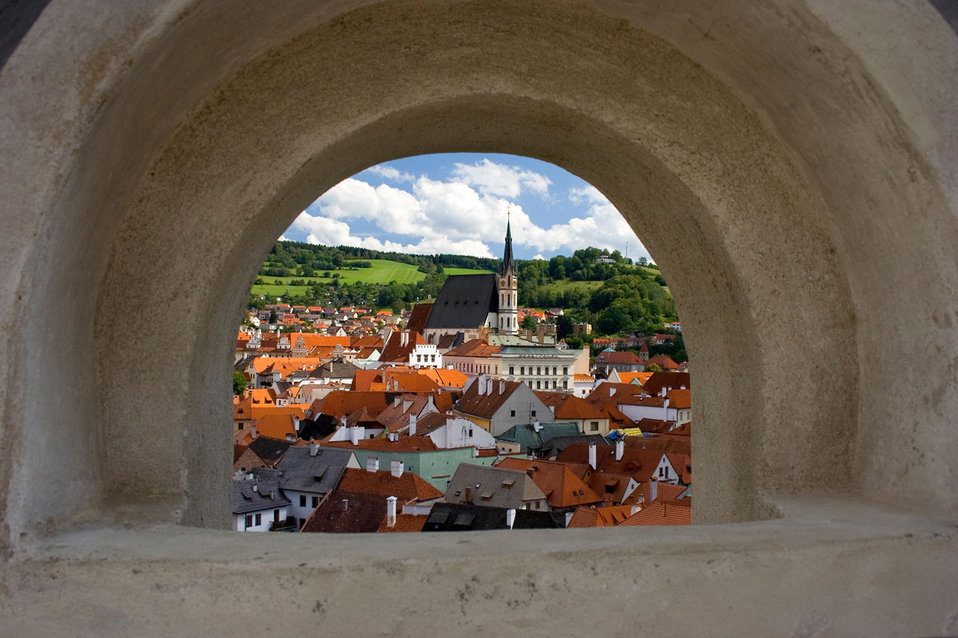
Cesky krumlov

A view on cesky krumlov town from the castle.